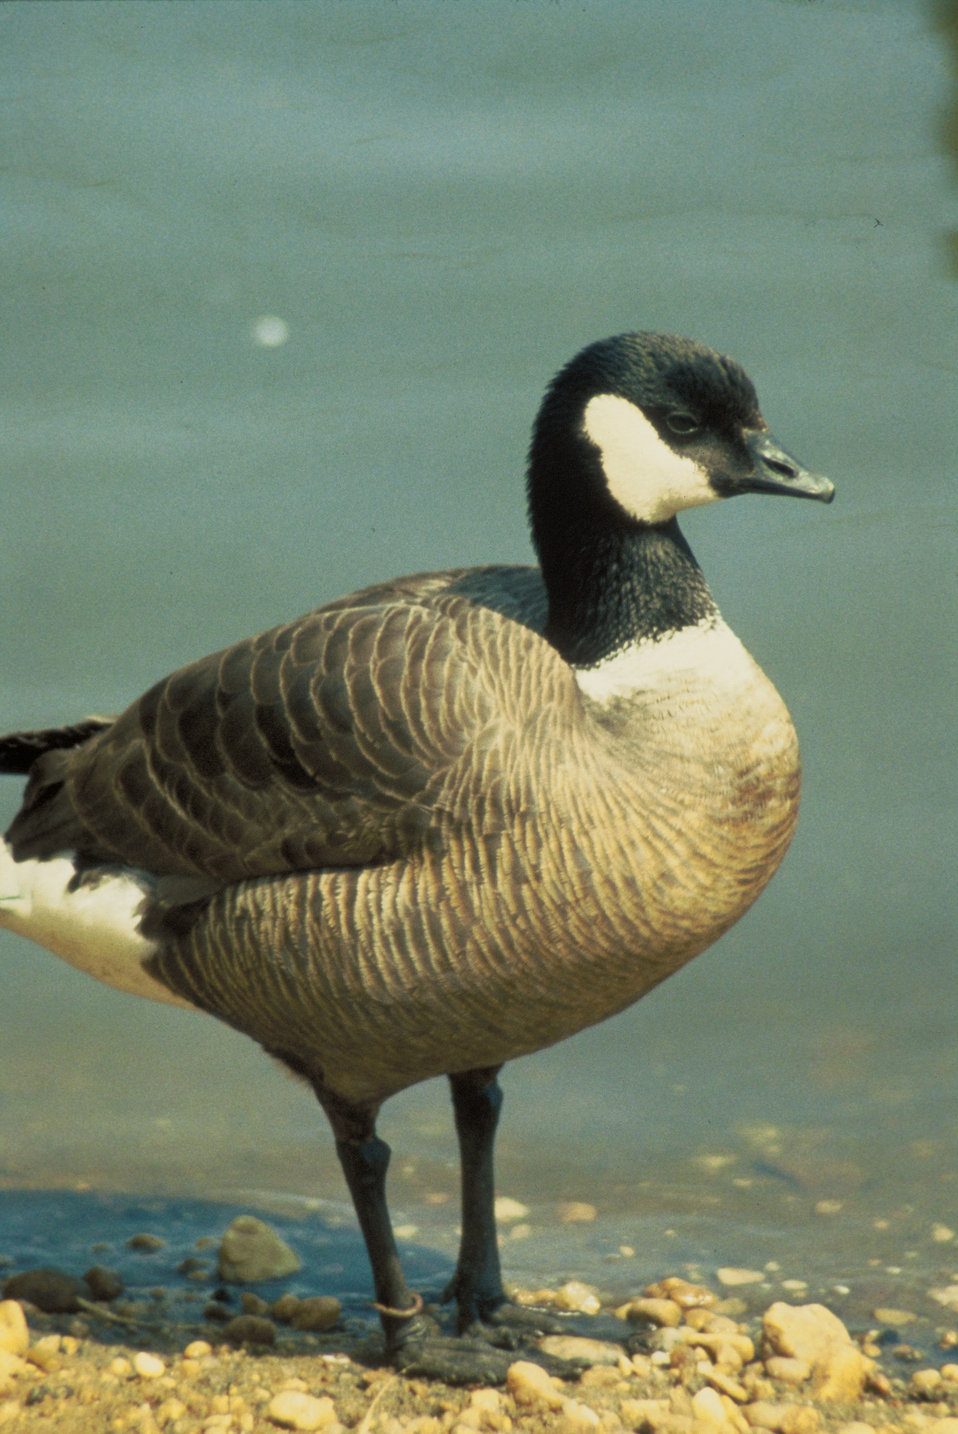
Aleutian Canada Goose.